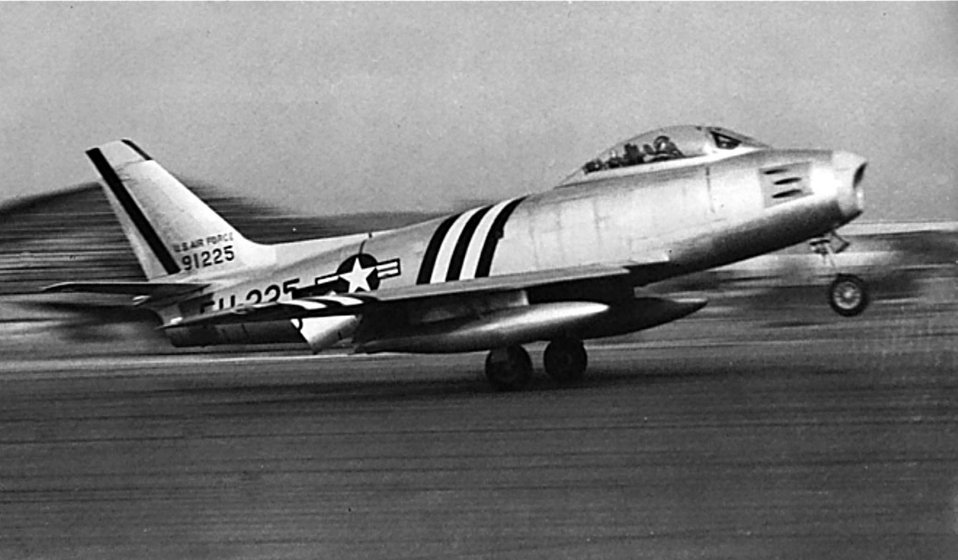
F-86

1940's -- F-86